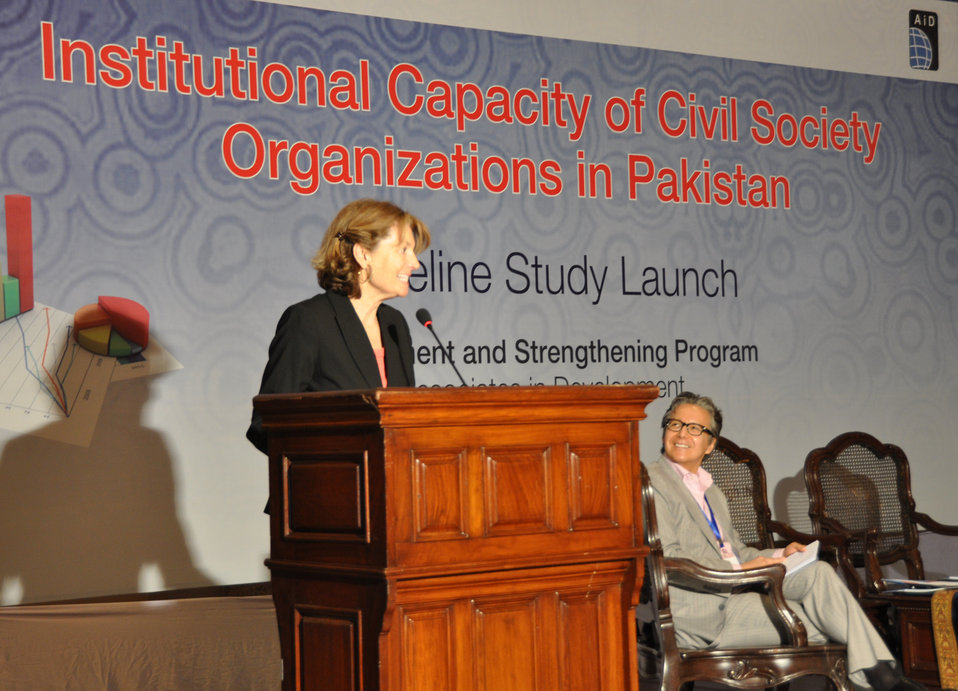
Institutional Capacity of Civil Society Organizations in Pakistan - Baseline Study Launch